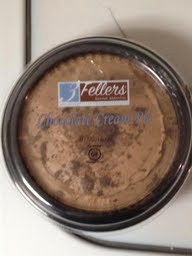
RECALLED – Chocolate Cream Pies

November 13, 2013 – Product Recall – 3 Fellers LLC Issues an Allergy Alert for Undeclared Allergen (Almonds) in Chocolate Cream Pies.